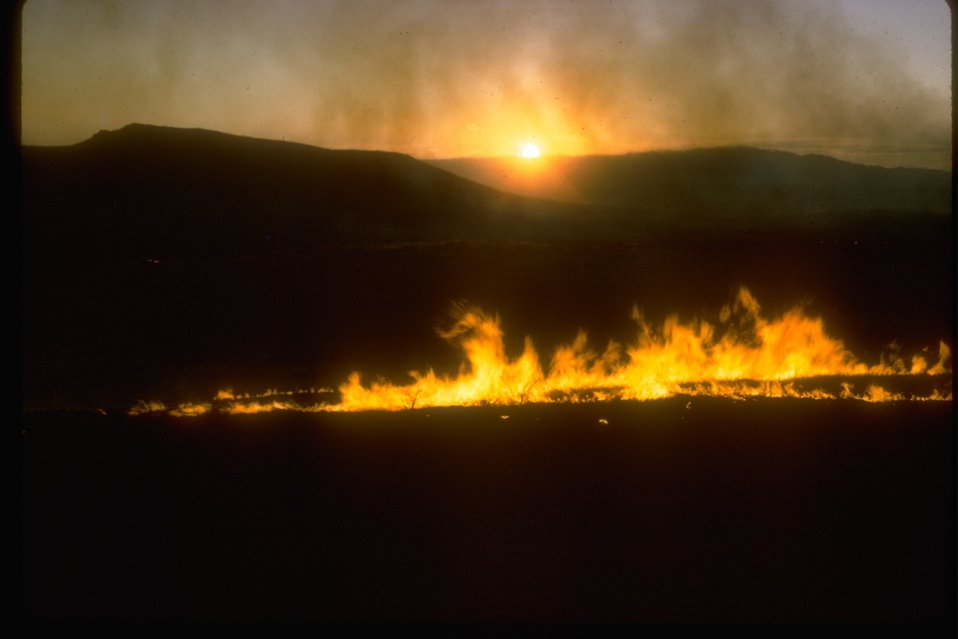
Range fire at sunset.